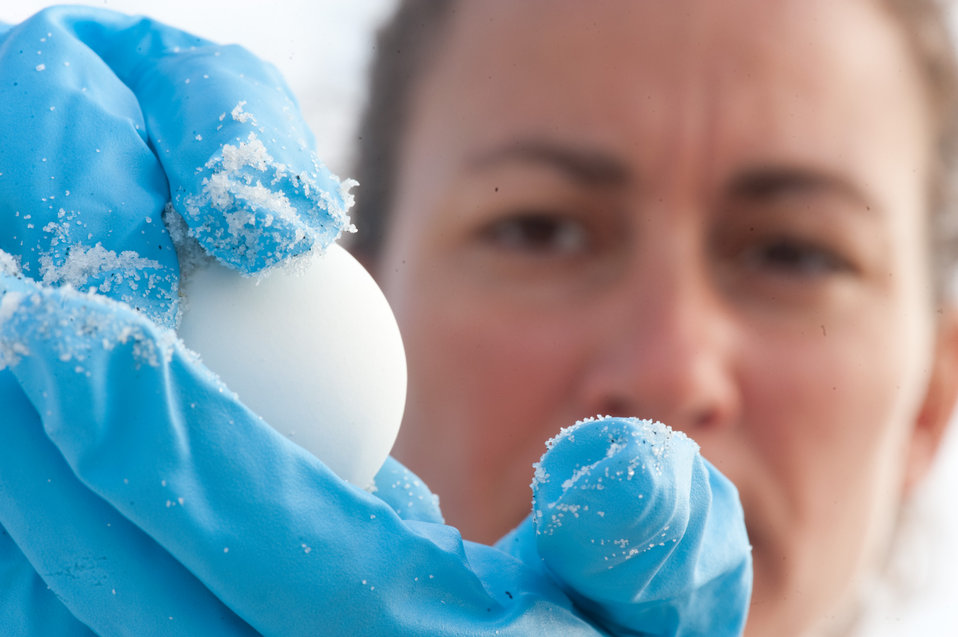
Turtle Eggs avoid Gulf Oil Danger

Kelley Anderson-Nunley very slowly carries a Loggerhead sea turtle egg to a Styrofoam cooler lined with white sand at Eglin Air Force Base, Florida, on August 9, 2010. Ms. Anderson-Nunley is a contract wildlife technician with Colorado State University. The gloves prevent skin oil from coming in contact with the egg. The 112 eggs of this nest will all get the gentle slow-motion lift from their beach nest. Because of the critical attachment of the embryo to the inside of the eggshell, the eggs must be gently lifted with out tilting or rotating, the egg. With equal care the transportation to the Atlantic coast is equally critical. At a controlled climate facility, they will be allowed to hatch in the cooler. Wildlife technicians will then release them into the ocean.